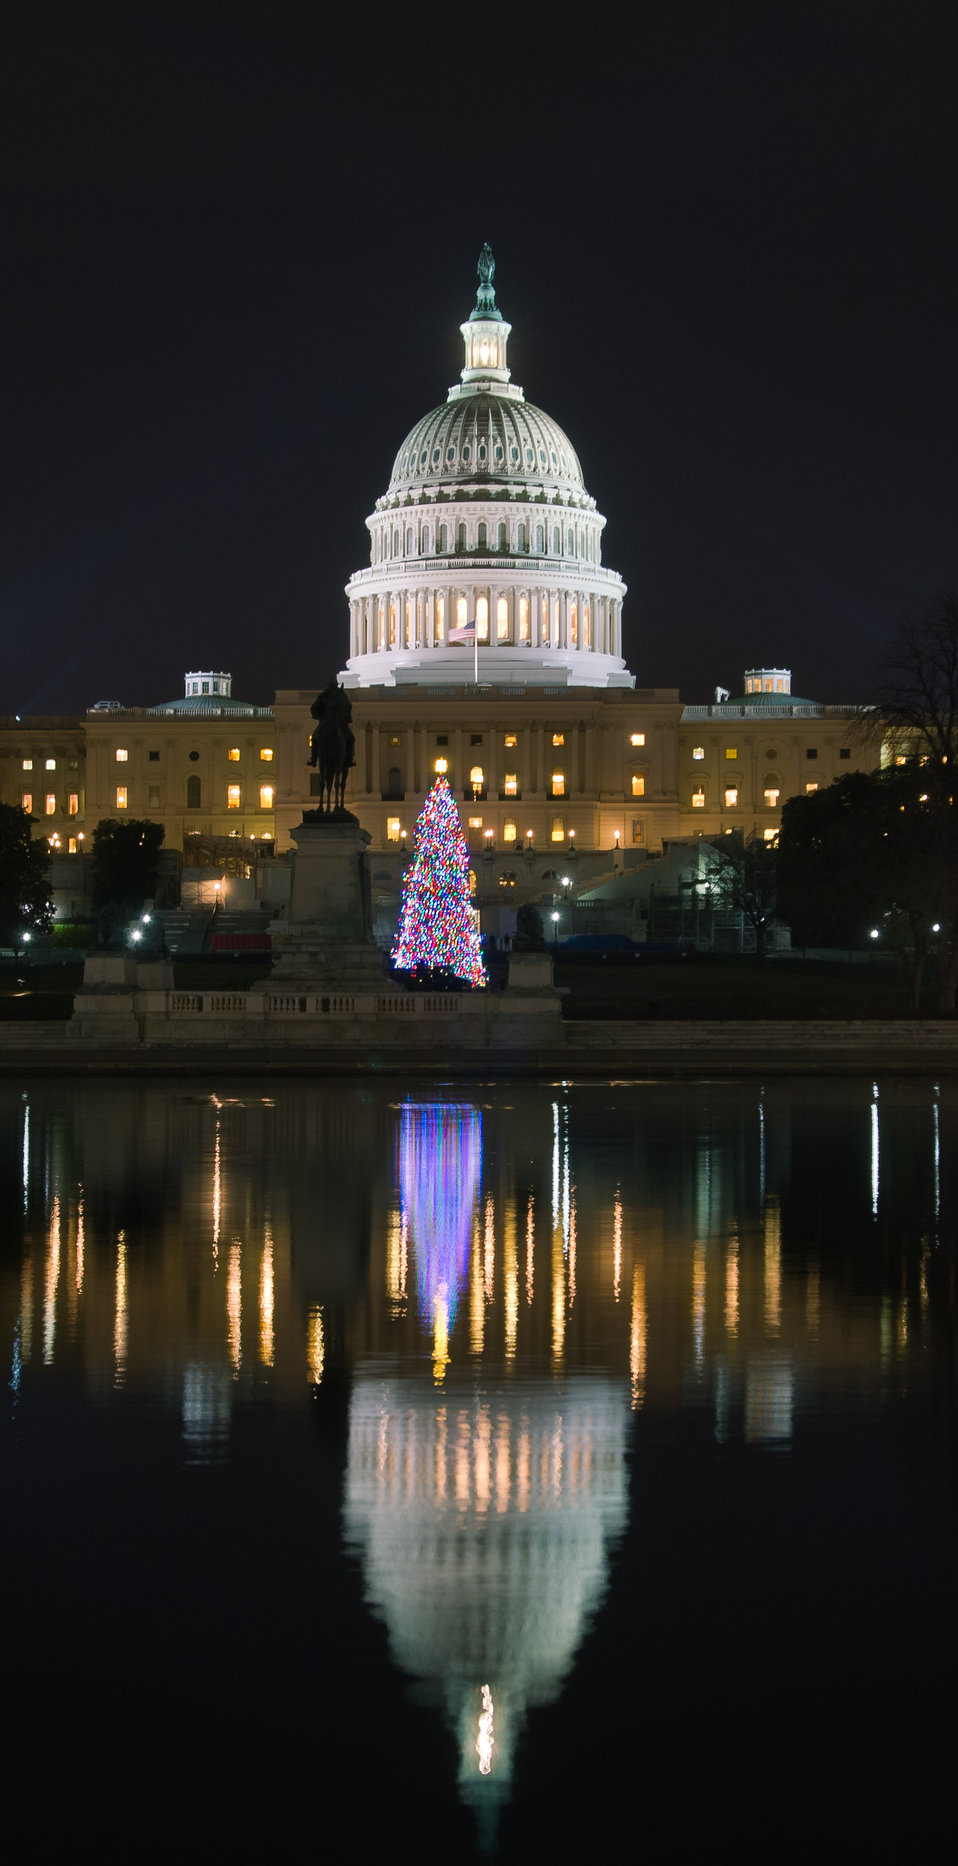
The lights of the 2012 U.S. Capitol Christmas Tree from the Blanco Ranger District of the White River National Forest near Meeker, Colorado; and decorated with hand-made ornaments, was switched on by Colorado Springs high school student Ryan Shuster and House Speaker John Boehner, on Tuesday, Dec. 4, 2012. Since November, the tree visited dozens of cities across the country as it made its way here on Nov.26, 2012. The 73-foot Englemann spruce traveled from the White River National Forest in Colorado. Other representatives as well as Natural Resources and Environment Under Secretary Harris Sherman spoke during the festivities.